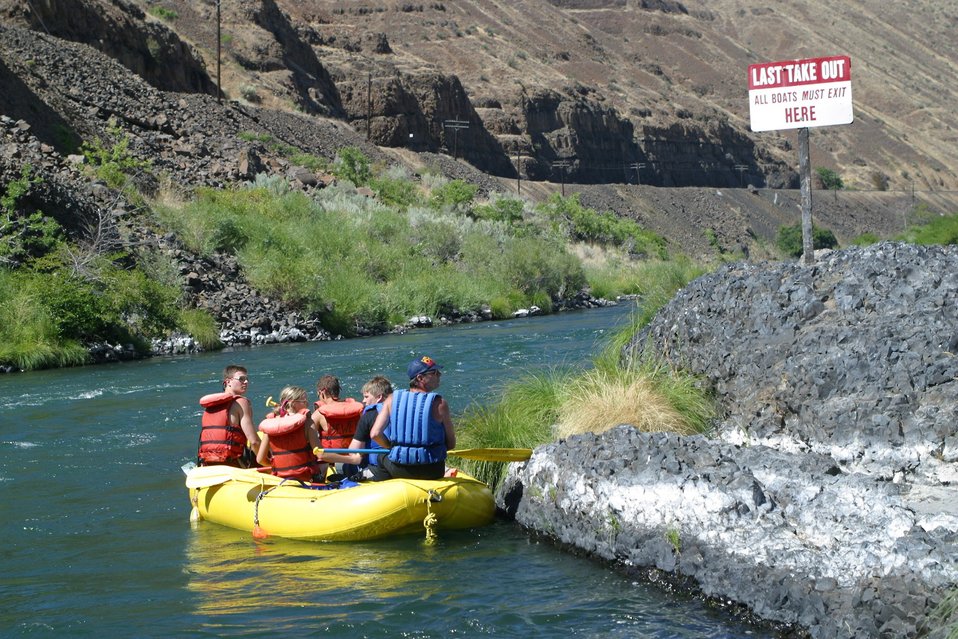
Sandy Beach is the last take out before Sherars Falls. All watercraft must exit the river!